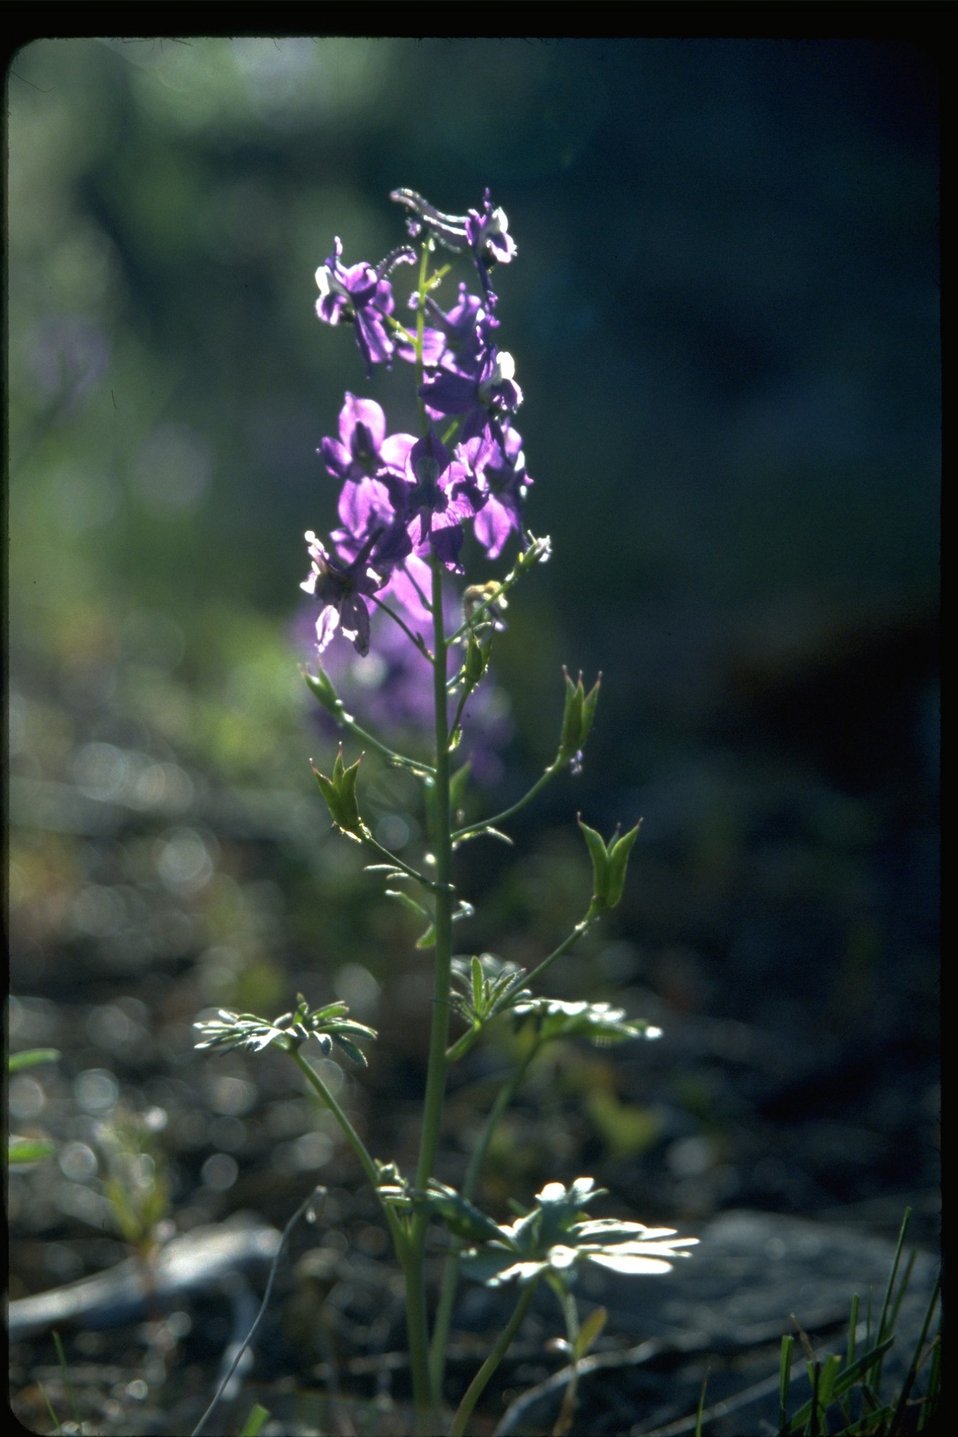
Backlight shot of delphinium/Larkspur.